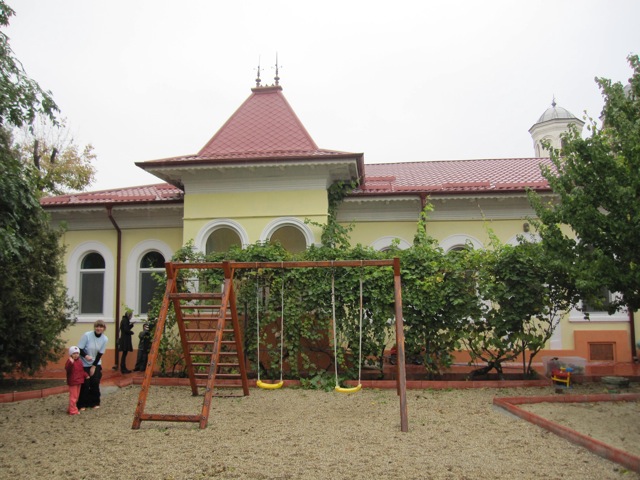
Ananda Marga (AMURTEL) Gradinita Rasarit ('Sunrise nursery school') in Bucarest (Romania).